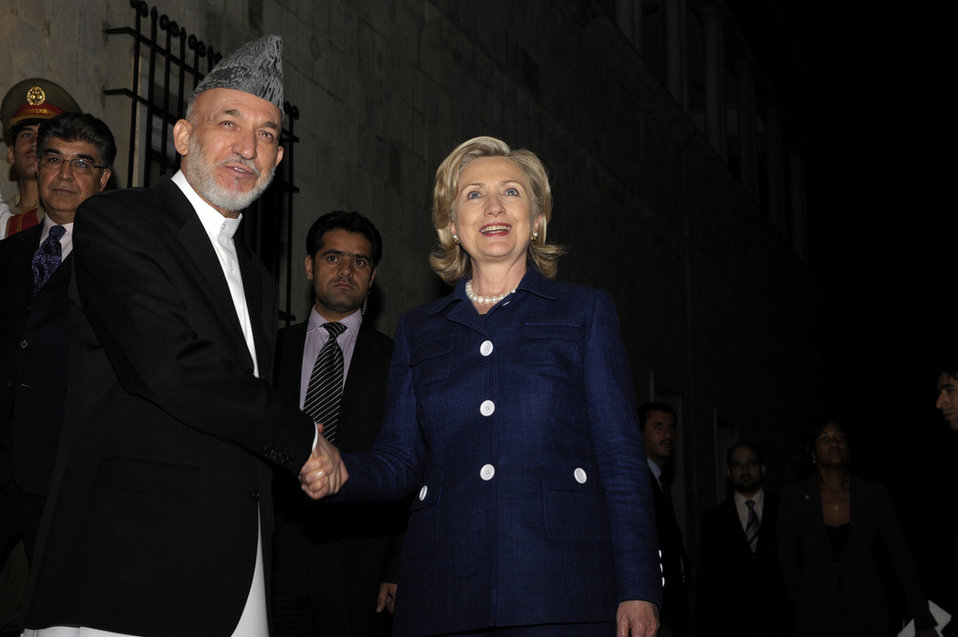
Secretary Clinton Shakes Hands With Afghan President Karzai

U.S. Secretary of State Hillary Rodham Clinton shakes hands with Afghan President Hamid Karzai outside the Presidential Palace in Kabul, Afghanistan, on July 19, 2010.